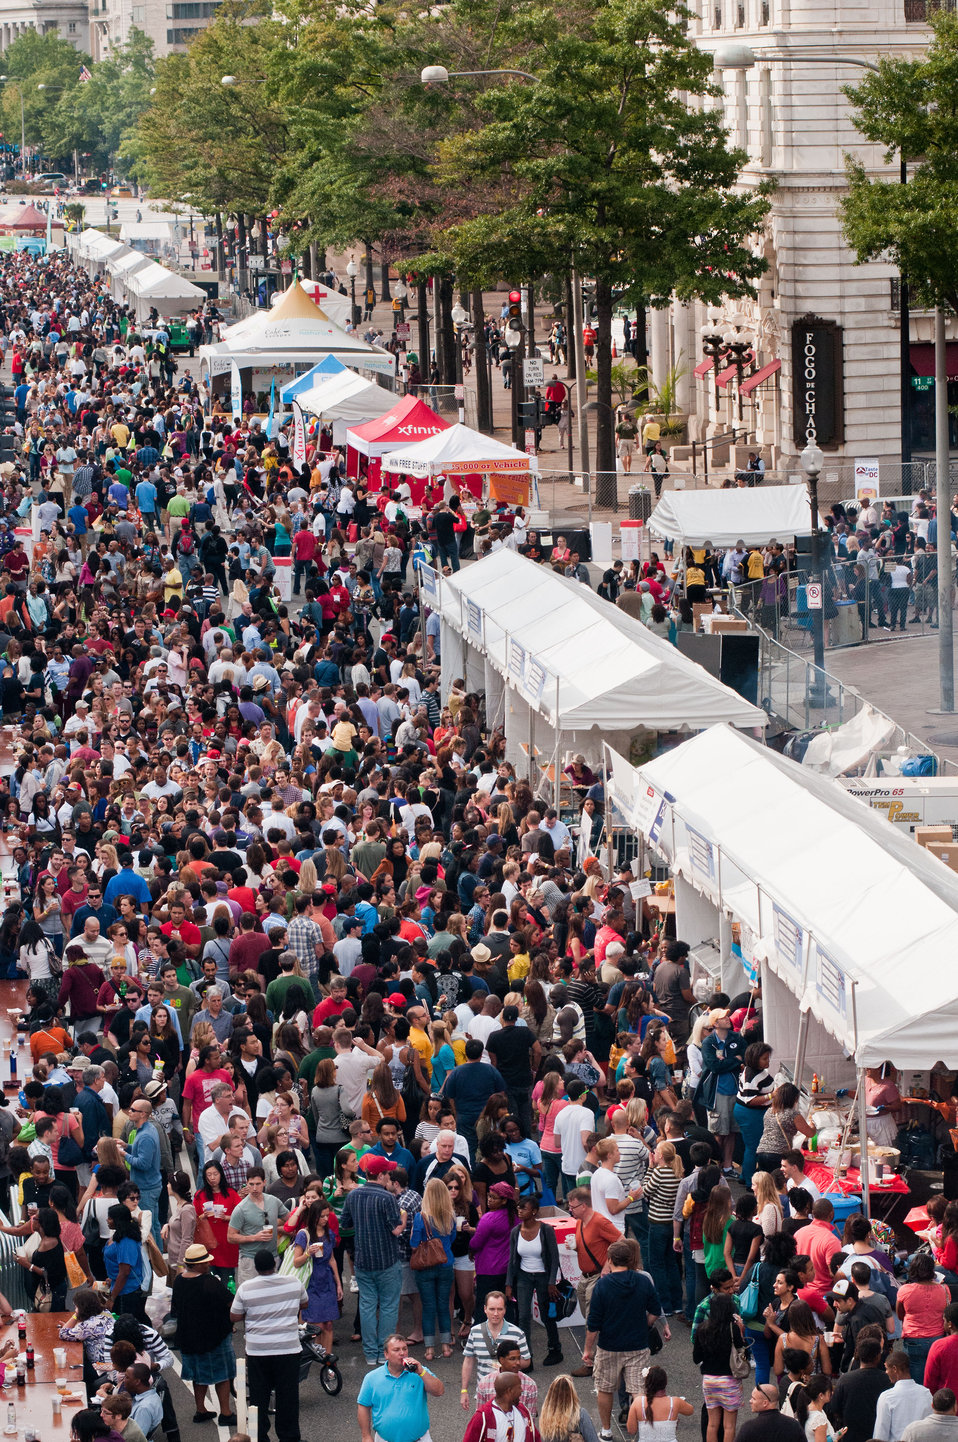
The Taste of D.C., event highlights more than 70 eateries, 30 specialty beer providers, the United Service Organization (USO) Metropolitan Washington, and live bands. It is anticipated that more than 500,000 people will attend over the course of the three-day event, which extends from the White House to the Capitol, along Pennsylvania Ave. in Washington D.C. on Saturday, October 6, 2012. Agriculture Food Safety and Inspection Service specialists present talks and cooking demonstrations. Agriculture’s mobile Discovery Zone is on hand to educate children and parents about the four main principals of food safety – clean, separate, cook and chill.